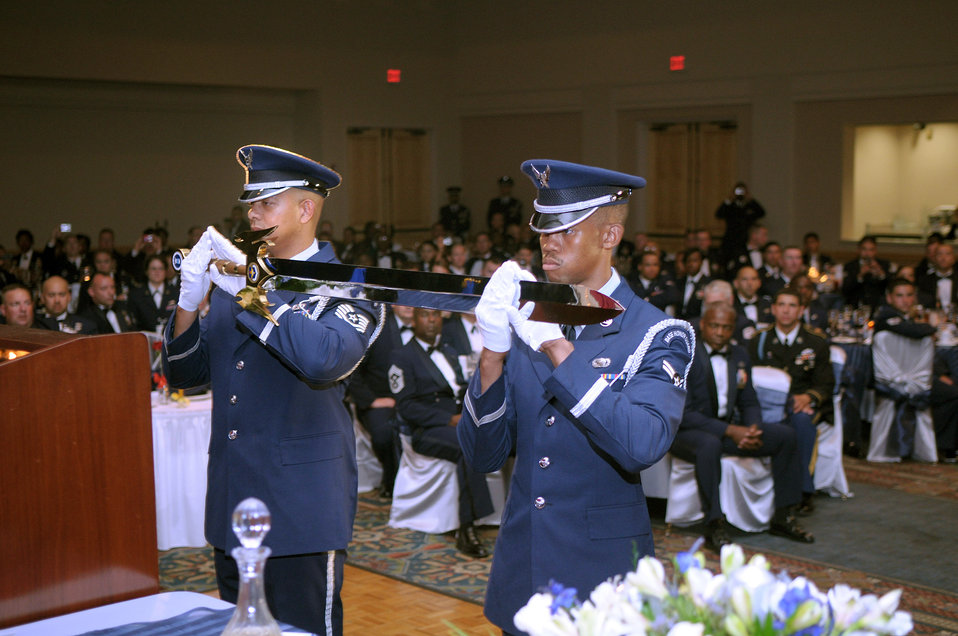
AETC inducts newest member into Order of the Sword

Air Education and Training Command honor guard Airmen, present the AETC command sword to the head table during Gen. Stephen R. Lorenz's Order of the Sword induction ceremony July 16, 2010 at the Gateway Club on Lackland Air Force Base, Texas. More than 300 Airmen from across AETC gathered to witness General Lorenz's induction into the Order of the Sword. General Lorenz is the Air Education and Training Command commander.